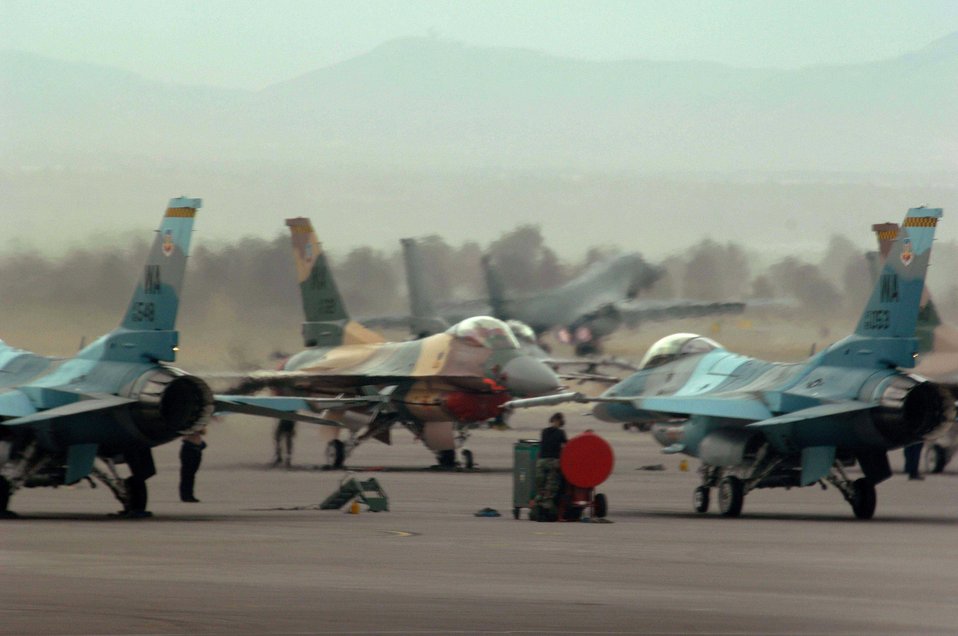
Revving up for Red Flag

In the background, a B-1B Lancer takes off Aug. 30 during Red Flag 07-3 exercise at Nellis Air Force Base, Nev. Red Flag tests aircrew war-fighting skills in realistic combat situations. The aircraft fly missions during the day and night to the nearby Nevada Test and Training Range to simulate an air war. The Lancer is from Ellsworth AFB, S.D.